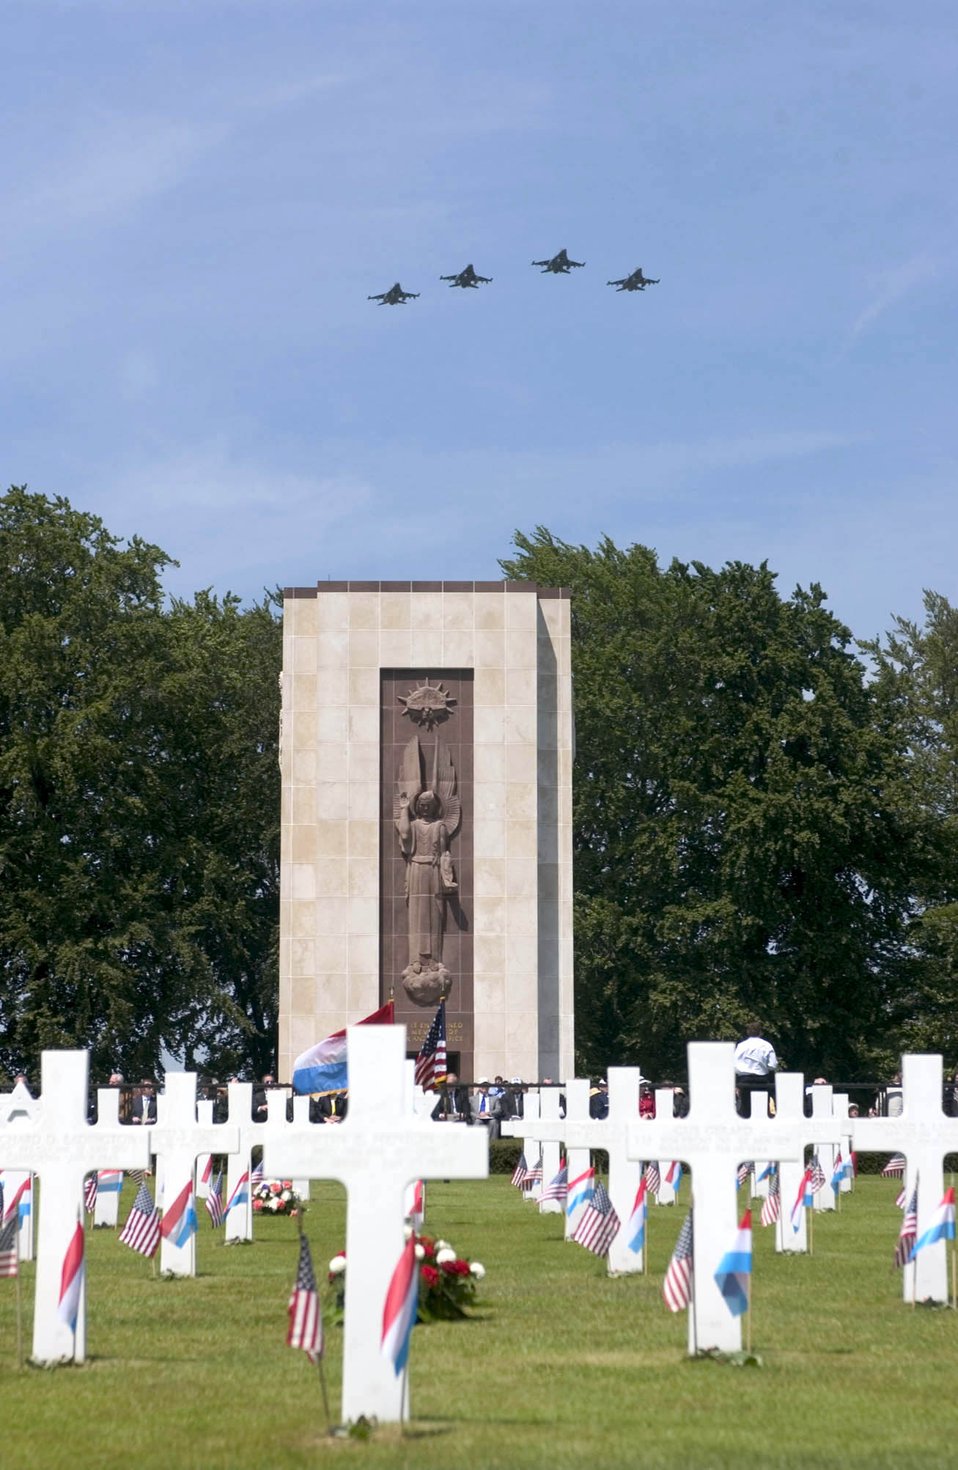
Airmen remember

MEMORIAL DAY -- Ceremonies commemorating Memorial Day were held worldwide including this one May 29 at the Luxembourg American Cemetery and Memorial. There are 5,076 Americans buried at the cemetery.